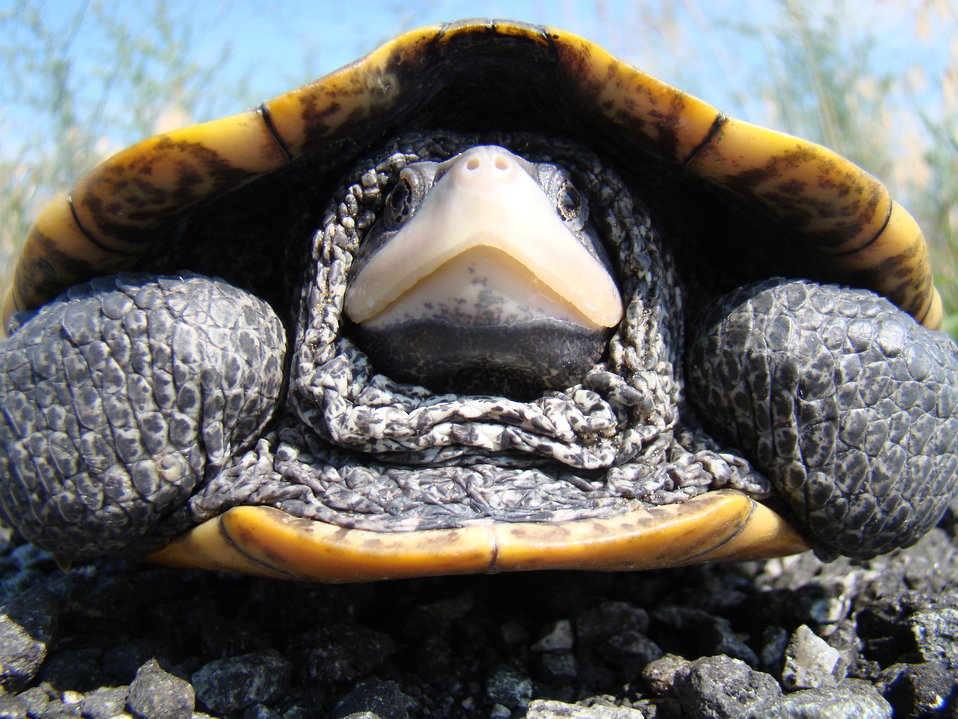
A Diamondback terrapin crawls through the Jamaica Bay Wildlife Refuge around J John F. Kennedy (JFK) International Airport on May 23, 2012.The Diamondback terrapin is a type of turtle that prefers to live in brackish marshes and the Jamaica Bay Wildlife Refuge around JFK is a favored habitat for these reptiles. In the late spring, they crawl on to land to lay their eggs in the sandy soils near the airport, often crossing runways to do so. Terrapins on the runway pose a threat to aircraft using the runways. If a plane hits the terrapins, their carcass can attract scavengers like gulls, which may pose an even greater danger to airline safety.